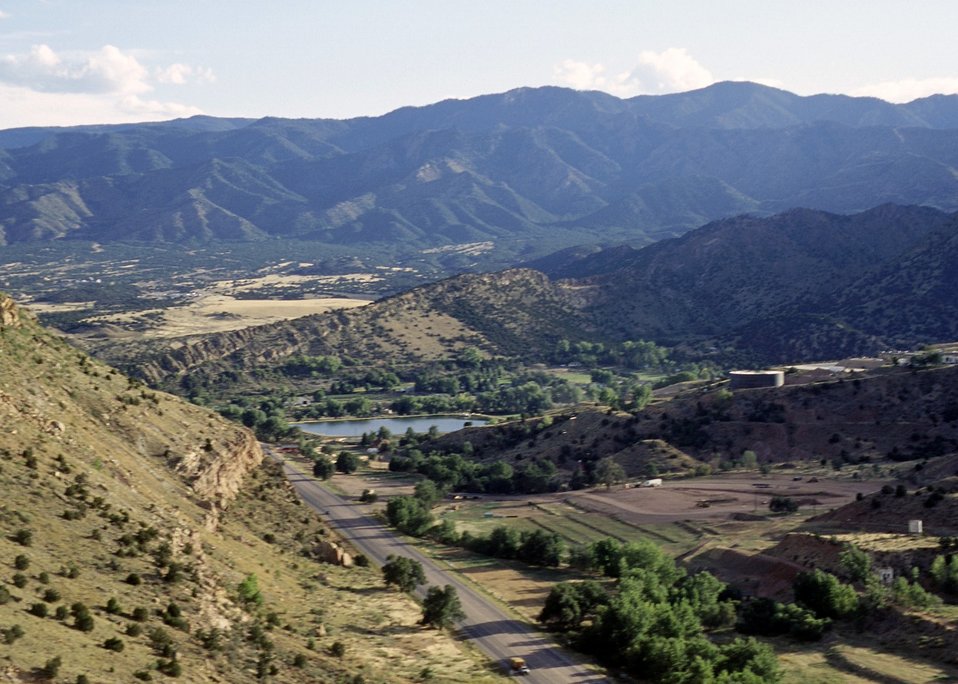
Skyline Drive